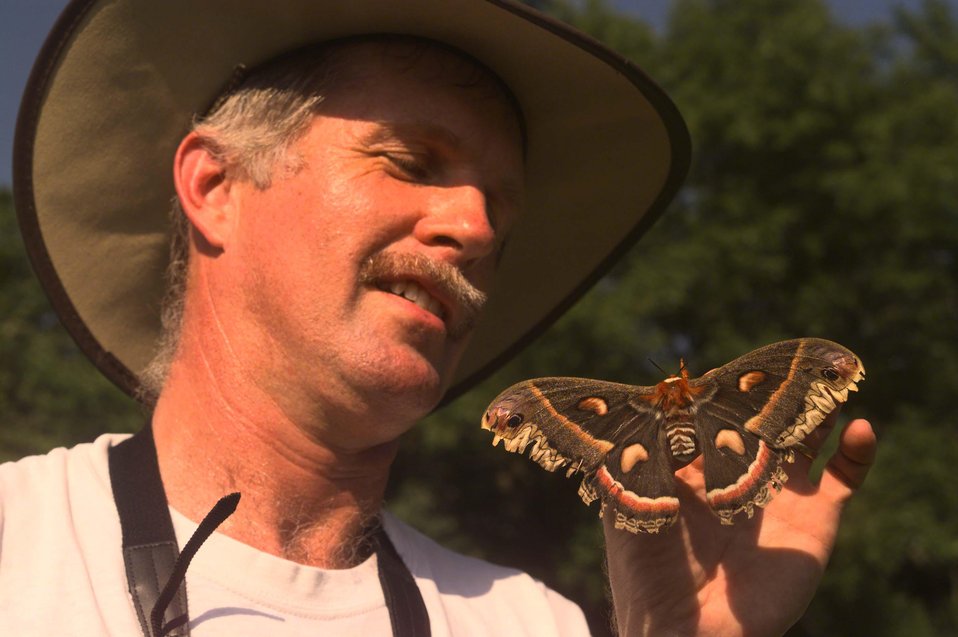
ONE OF THE MANY BUTTERFLIES FOUND ON THE SITE OF THE FERMI NATIONAL ACCELERATOR LABORATORY.

IN AN EFFORT TO RECOGNIZE AND PRESERVE ITS PRAIRIE HERITAGE, FERMILAB ENCOURAGES NATURAL PRAIRIE LIFE AND VEGETATION. THE FERMI NATIONAL ACCELERATOR LAB ADVANCES THE UNDERSTANDING OF THE FUNDAMENTAL NATURE OF MATTER AND ENERGY BY PROVIDING LEADERSHIP AND RESOURCES FOR QUALIFIED RESEARCHERS TO CONDUCT BASIC RESEARCH AT THE FRONTIERS OF HIGH ENERGY PHYSICS AND RELATED DISCIPLINES.